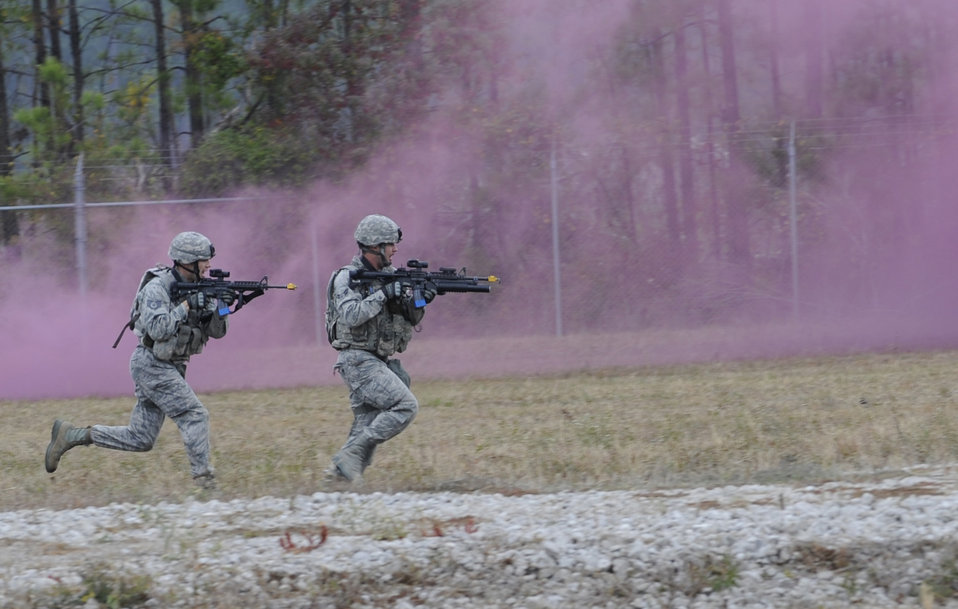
Color me purple

Members of the 509th Security Forces Squadron participate in phase one, the bounding over watch, of the mental and physical challange during the second annual Global Strike Challenge Nov. 7, 2011, at Camp Minden. The competition includes security forces and missile and bomber forces from Air Force Global Strike Command. The teams have the opportunity to participate in innovative thinking, teamwork and esprit de corps that are essential to the mission.